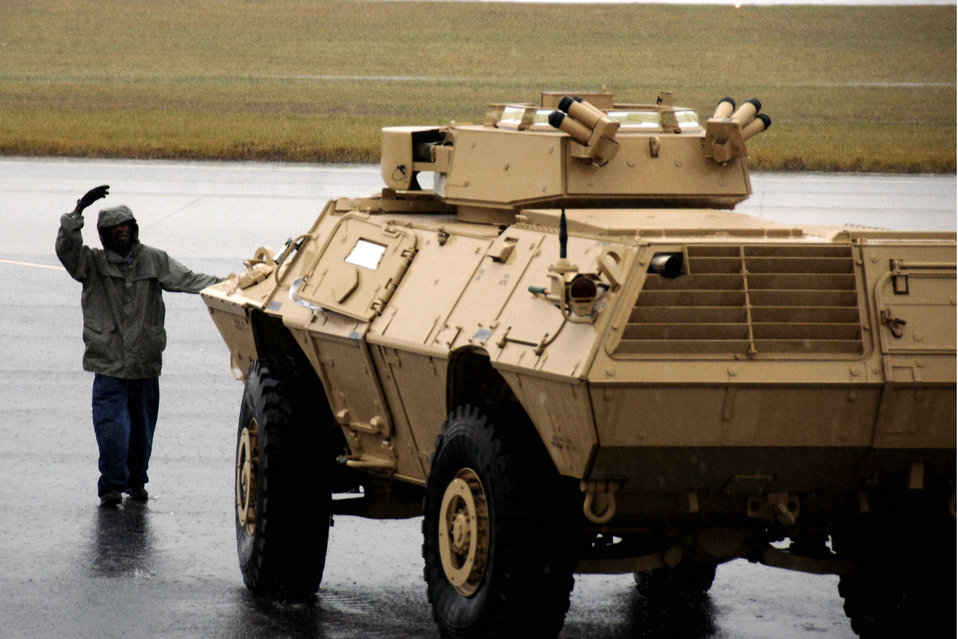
Charleston officials ship vehicles to support warfighters

Corrie Frazier guides an armored security vehicle toward the back of a C-17 Globemaster III Oct. 24 at Charleston Air Force Base, S.C. The ASV is a four-wheel-drive vehicle that provides ballistic protection to warfighters who are using them against various threats. Mr. Frazier is with the 437th Aerial Port Squadron.